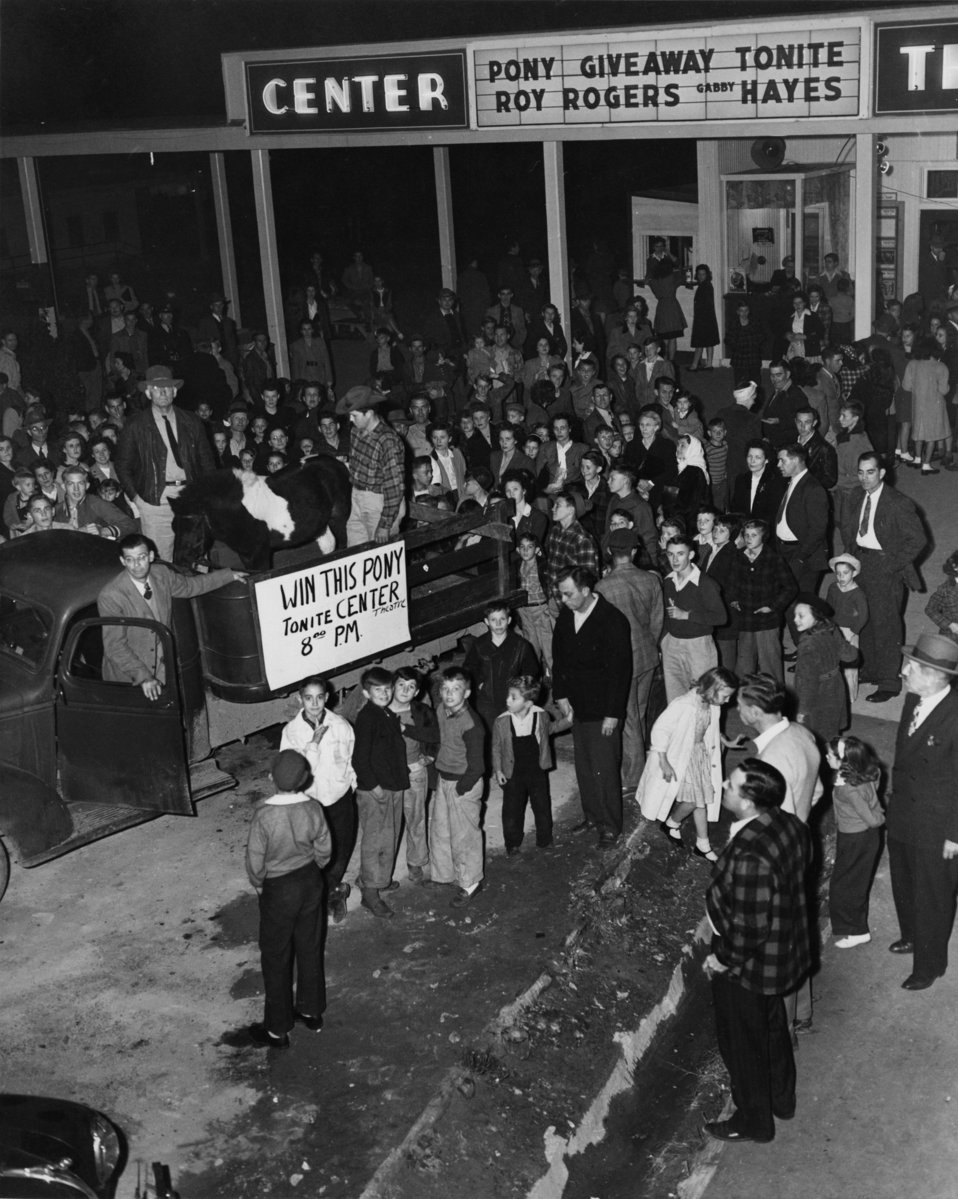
Center Theater Pony Prize Oak Ridge

3113-3 DOE photo by Ed Westcott
Center Theater Pony Prize Oak Ridge Tennessee 11-30-1946